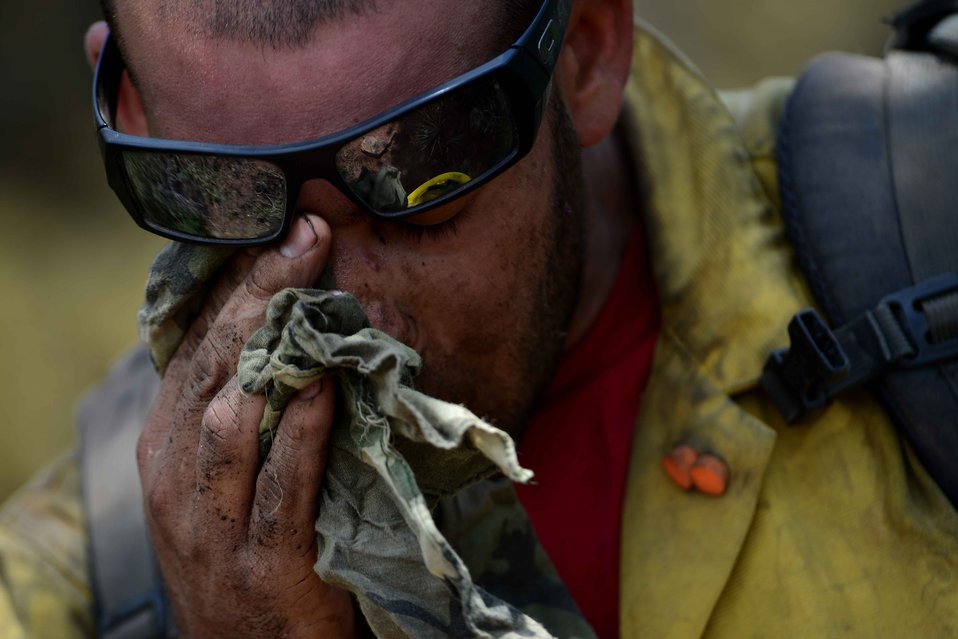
Catching a breath

Chris Loung wipes sweat from his face while cutting a fire line in the Mount Saint Francois area of Colorado Springs, Colo., June 28, 2012. The Waldo Canyon fire has grown to 18,500 acres and burned more than 300 homes. Loung is a firefighter with the Vandenberg Air Force Base, Calif., Hot Shots.